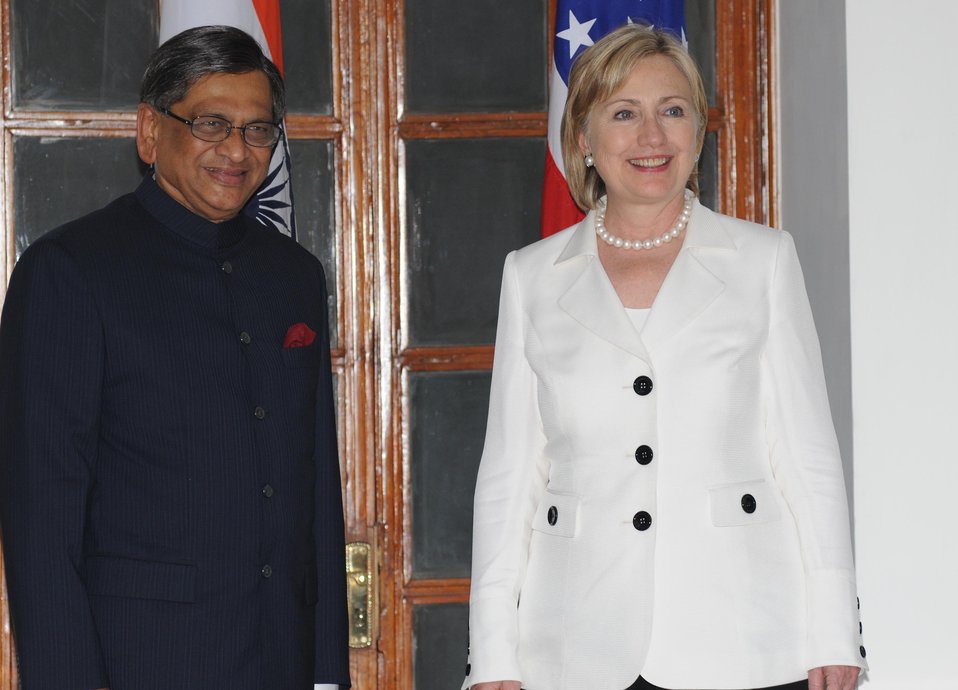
U.S., India Sign Bilateral Science and Technology Endowment Agreement

U.S. Secretary of State Hillary Rodham Clinton and Indian Minister of External Affairs S.M. Krishna after signing of a U.S.-India bilateral science and technology endowment agreement in New Delhi, India July 20, 2009.